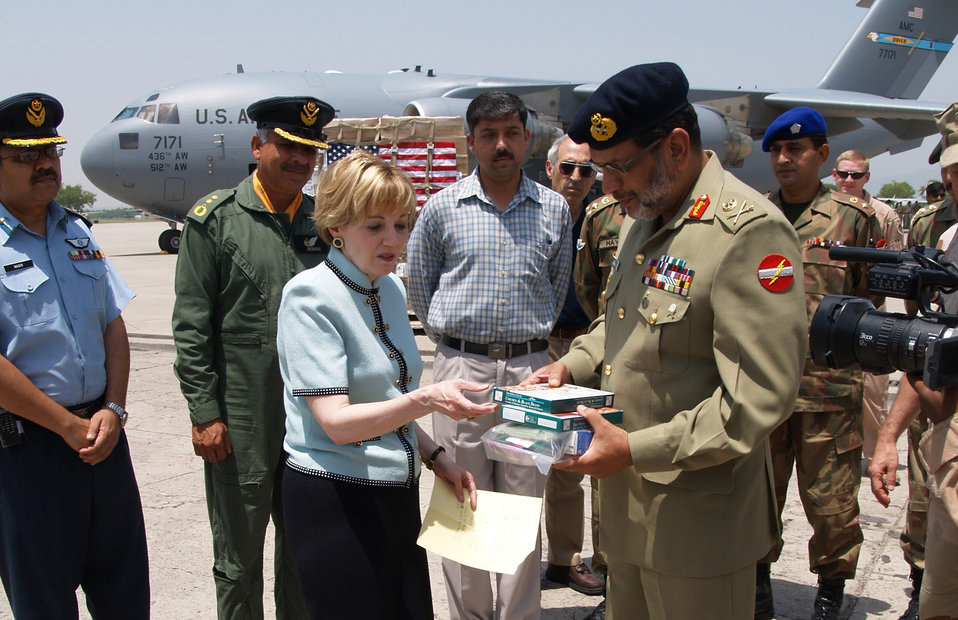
U.S. military shepherds humanitarian aid to Pakistan

U.S. Ambassador to Pakistan Anne W. Patterson hands over one of the 120,000 meals destined for displaced people in Pakistan to Lt. Gen. Nadeem Ahmed, coordinator of Pakistan's relief effort at Chaklala Air Base, Pakistan, May 20.